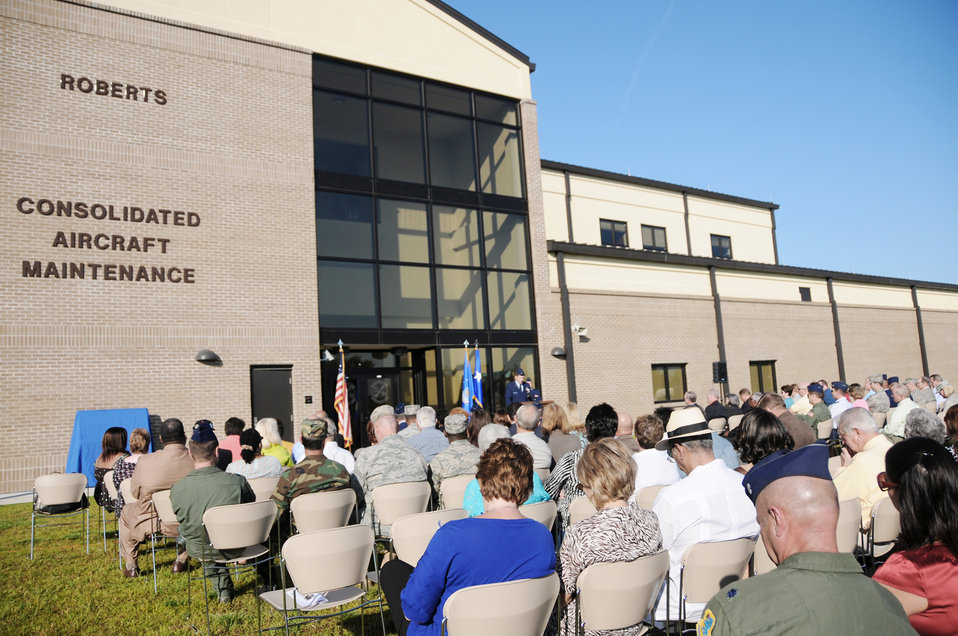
Aircraft maintenance facility dedicated to Tuskegee Airman

Airmen from Keesler Air Force Base, Miss., performed a dedication ceremony of the Consolidated Aircraft Maintenance Facility named after Col. (Ret.) Lawrence Roberts who served as a Tuskegee Airman and adopted Biloxi, Miss., as his home. The $22.6 million facility will be used to maintain the C-130J six-bladed composite propeller, and many other significant maintenance capabilities. The Roberts' family, along with more than 250 community and civic leaders, attended the ceremony.